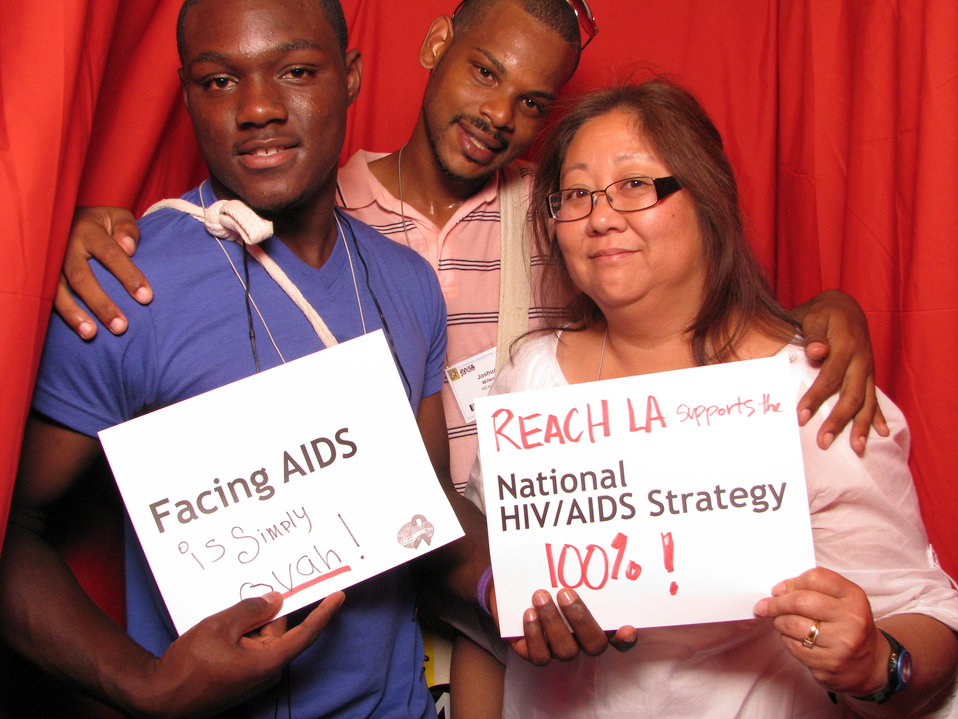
FACING AIDS is simply ovah! REACH LA supports the National HIV/AIDS Strategy 100%!

From the AIDS.gov photo booth at the U.S. Conference on AIDS, September 2010 (Orlando, FL).